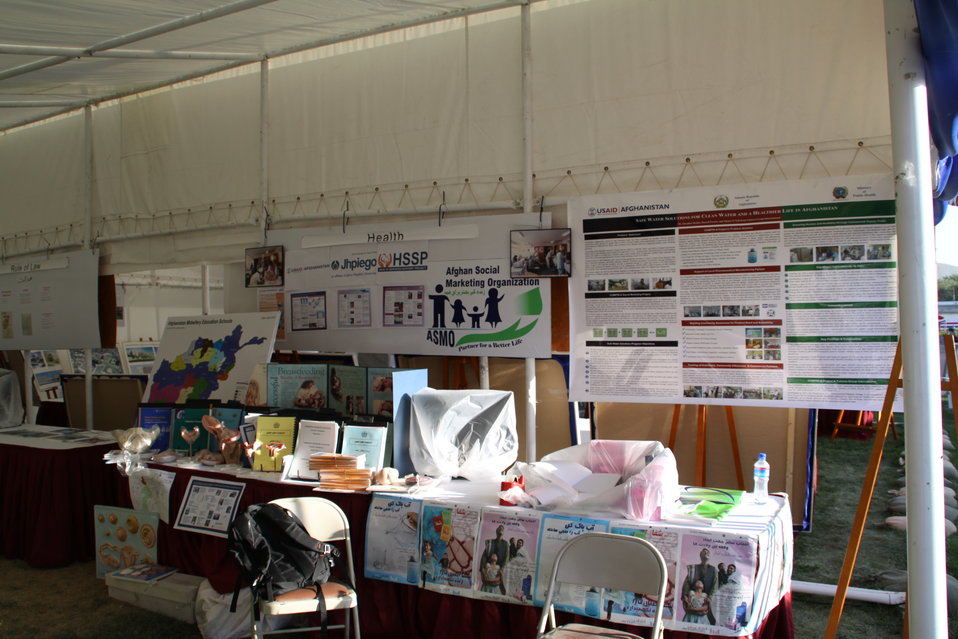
Official July 4th Event Preparation